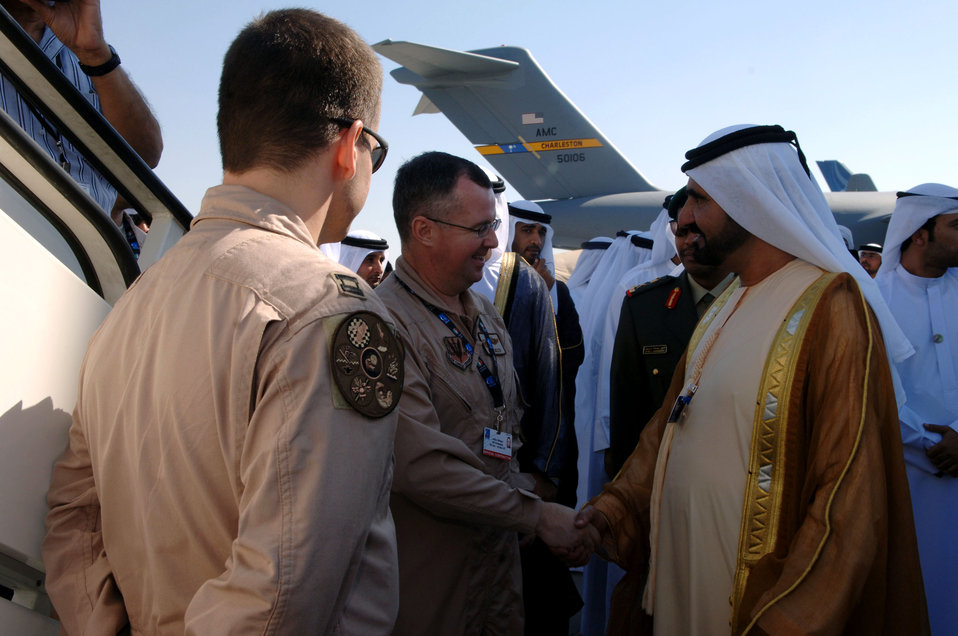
Dubai Air Show

His Highness Shaikh Mohmmed bin Rashid Al Maktoum, vice president and prime minister of the United Arab Emirates and ruler of Dubai, shakes hands with Lt. Col. John Ukleya and Capt. John Dress Nov. 11 at the Dubai Air Show. Colonel Ukleya and Captain Dress are E-3 Sentry AWACS aircrew member with the 552 Air Control Wing from Tinker Air Force Base, Okla. The United States military provided support for the 10th annual Dubai Air Show Nov. 11 to 15. Approximately 300 Airman, Soldiers and Sailors, and various Air Force and Navy aircraft from bases in the Persian Gulf region and the United States exhibit a snapshot of the U. S. military's diverse aircraft inventory. The air show was an opportunity to build relationships with allied partners.